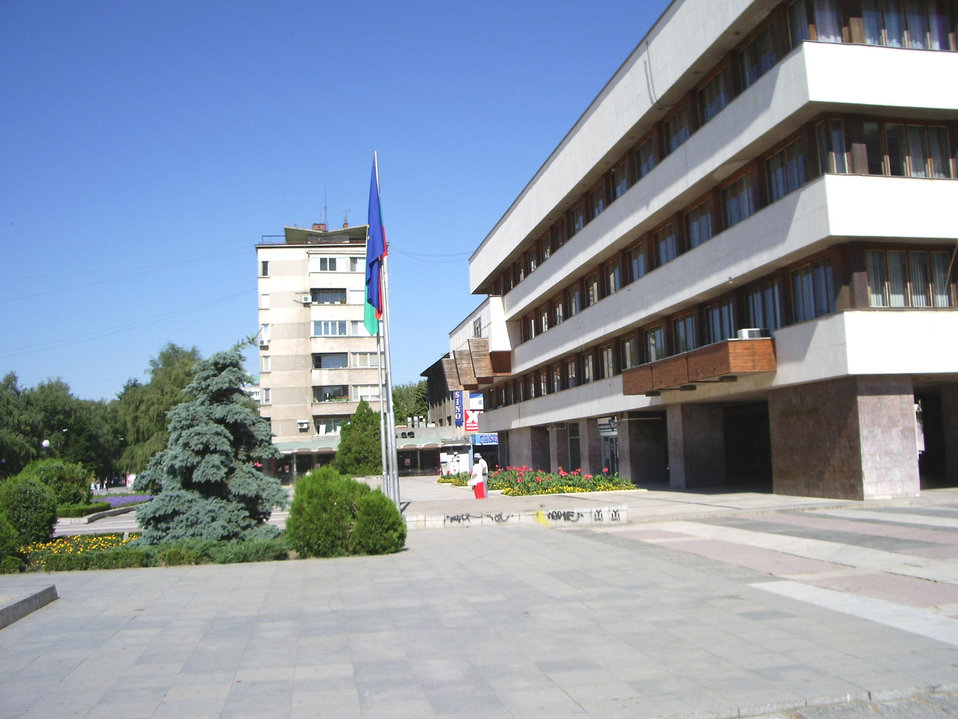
Municipality building, Yambol, Bulgaria
Author: